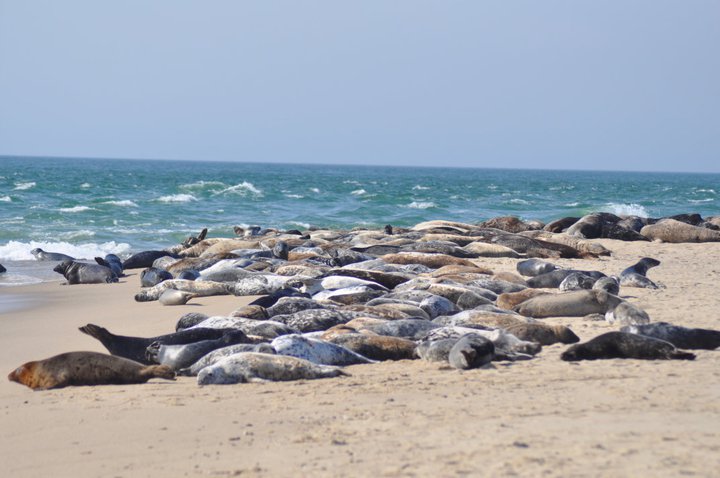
Seals at Nantucket National Wildlife Refuge in Massachusetts.